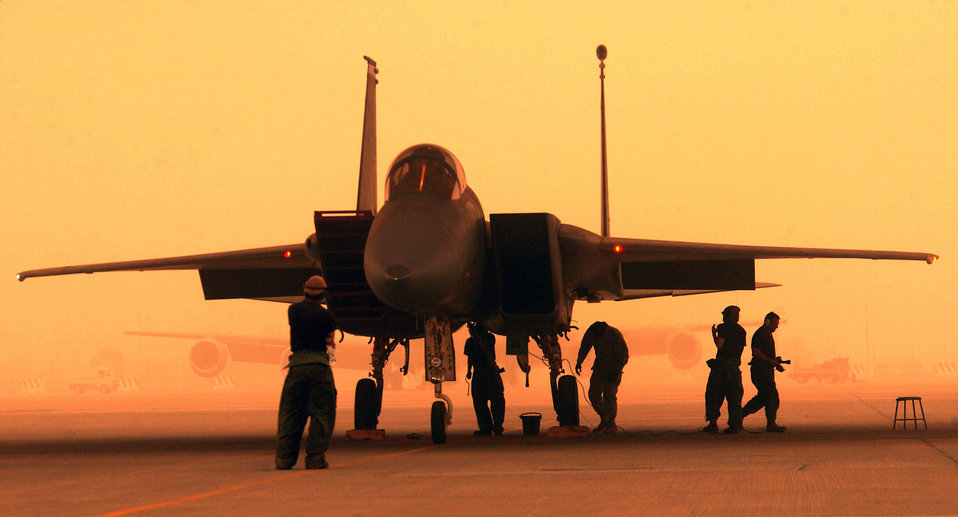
Prepare for launch

OPERATION IRAQI FREEDOM -- Air Force maintainers prepare to launch an F-15C Eagle for a strike misison from a forward deployed Operation Iraqi Freedom location. The maintenance technicians are assigned to the 363rd Expeditionary Maintenance Squadron. Coalition aircraft flew more than 1,500 sorties March 26 supporting Operation Iraqi Freedom.